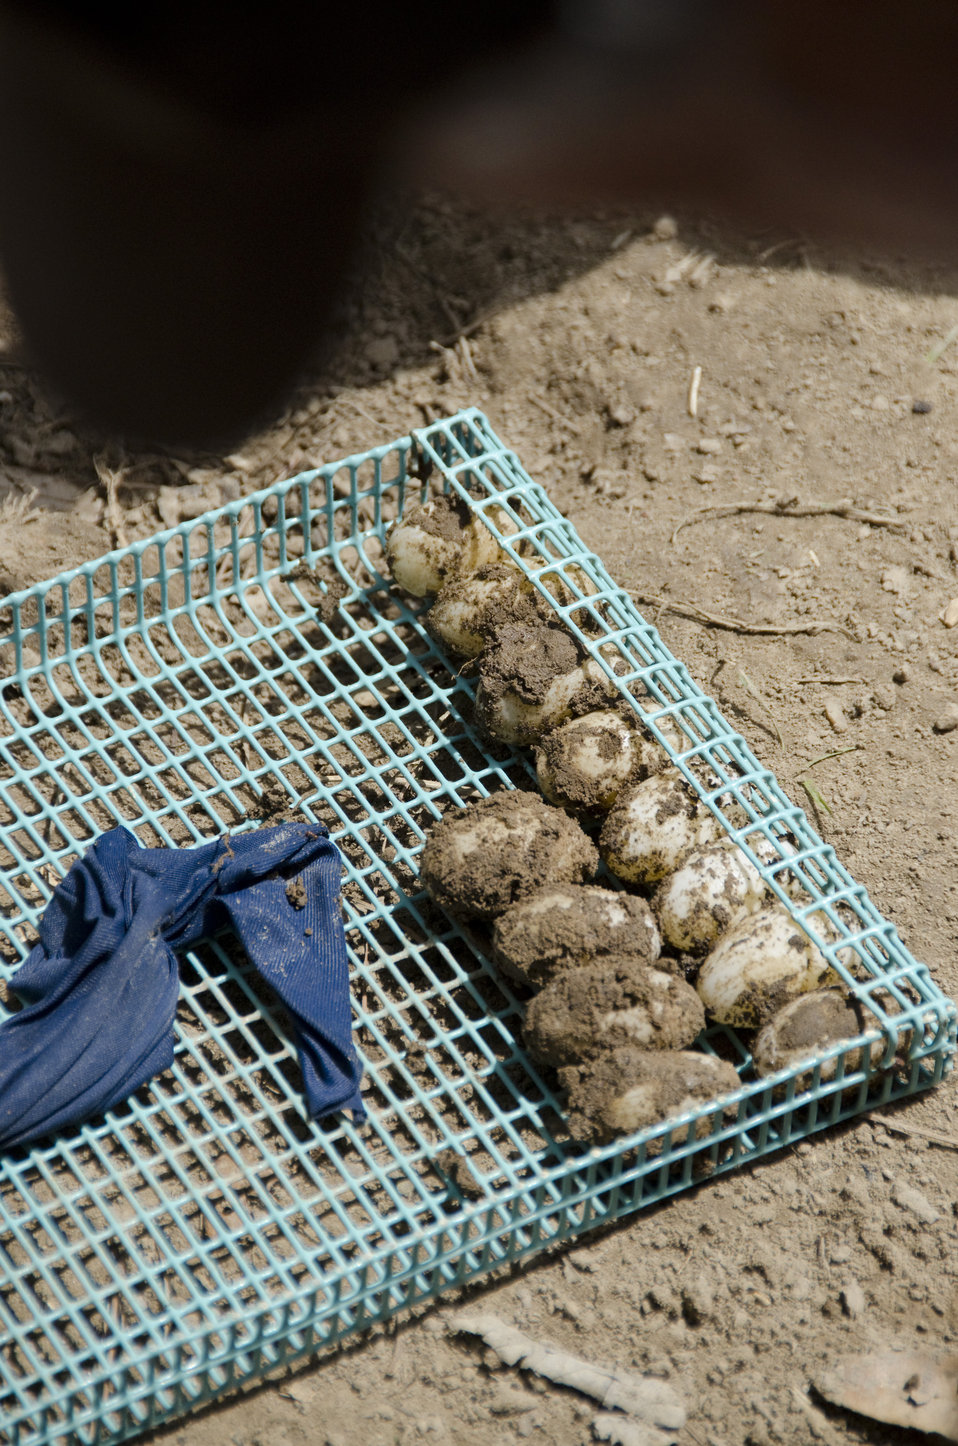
Turtle eggs

These red eared slider eggs will be cleaned and placed into an incubator for hatching.